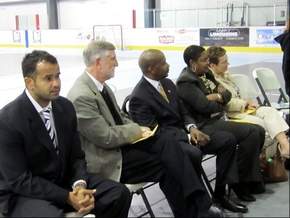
Charles County JDC Graduation

Del. C.T. Wilson, left, Del. Peter F. Murphy, Charles County Commissioners Reuben B. Collins II and Debra Davis and Charles County Board of Education Chairwoman Roberta S. Wise listen during a Charles County Juvenile Drug Court graduation ceremony. Two students were graduated that day.